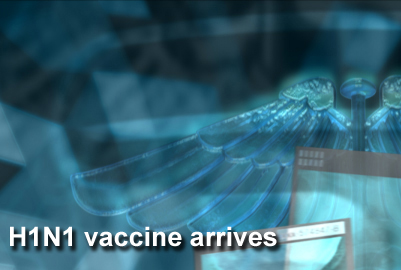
H1N1 vaccine arrives

Defense Department officials have started recieving H1N1 vaccinations and will begin distributing doses in the coming weeks. Vaccines first will be made available to deployed personnel, basic training installations and other service academies, and all health care workers assigned to military medical treatment facilities.